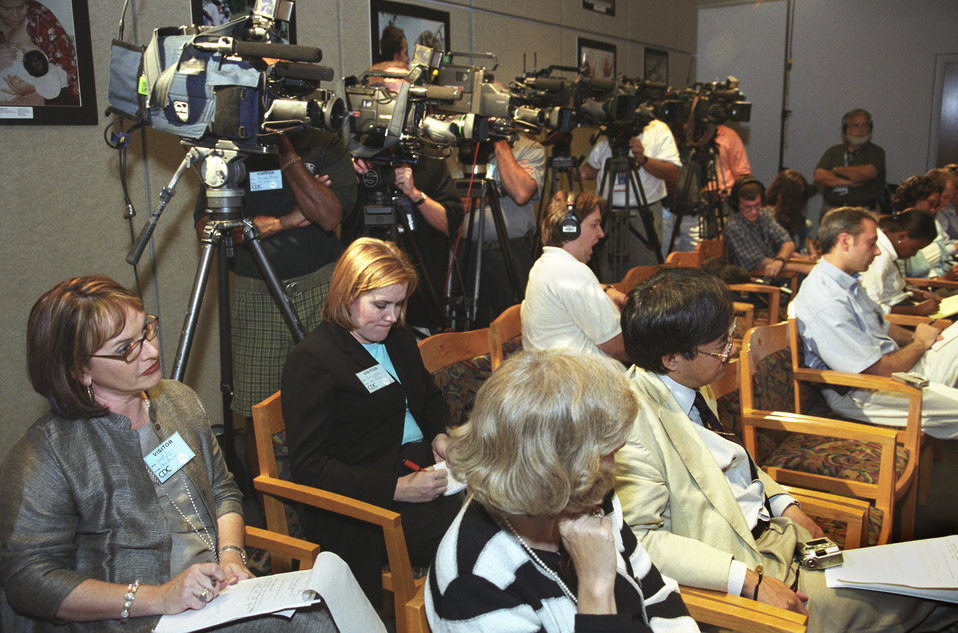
Centers for Disease Control and Prevention Bioterrorism Preparedness Press Briefing, August 27, 2002.